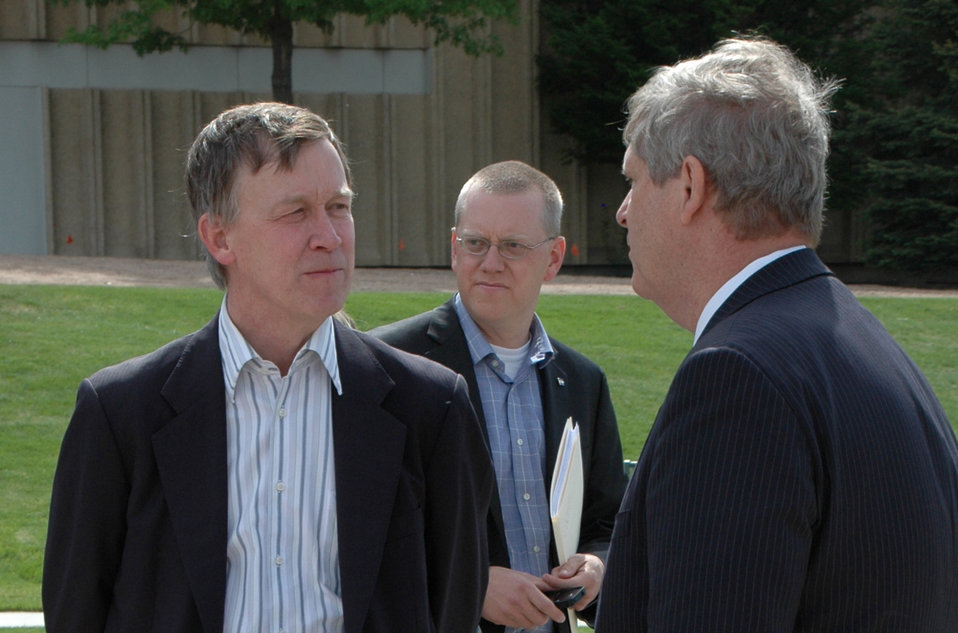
Colorado Governor John Hickenlooper (left) talks with Agriculture Secretary Tom Vilsack before the press conference for the Colorado Roadless Rule announcement in Denver Colorado on Wednesday, May 2, 2012.